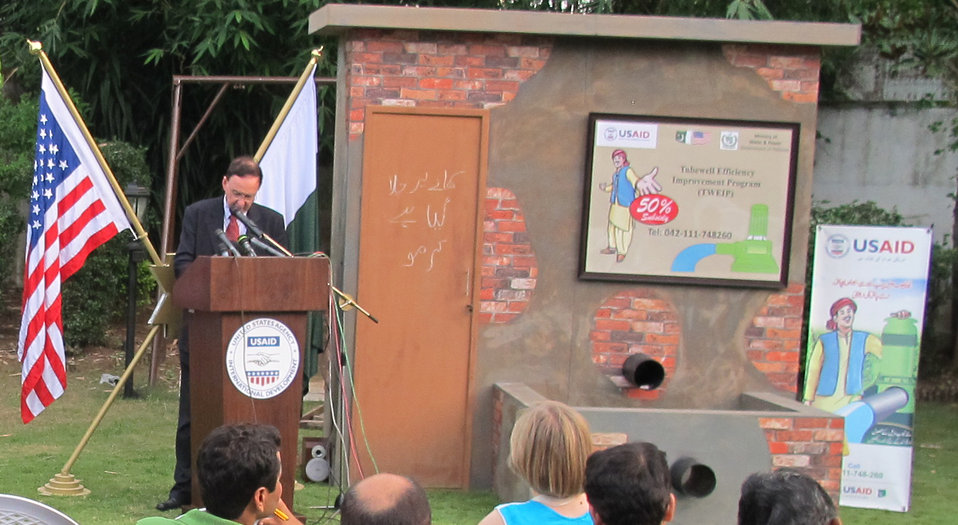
Launch of first-ever behavioral change campaign for energy efficiency in agriculture sector

Islamabad, July 28, 2011 – USAID Acting Deputy Director John Morgan speaking at the launch of Pakistan’s first-ever behavioral change campaign for energy efficiency in agriculture sector.

This campaign is sponsored by the U.S. Government as part of the United States commitment to support the Government of Pakistan in strengthening the country’s energy sector. This commitment was affirmed by U.S. Secretary of State Hillary Clinton in October 2009, when she announced a number of new energy programs. Through these programs, the U.S. Government is now working with Pakistan to reduce energy transmission losses, to improve energy production, and to increase the efficiency of the energy use.

The United States energy assistance, delivered by the U.S. Agency for International Development (USAID), includes a number of programs that together, will increase energy production capacity by approximately 600 Mega Watts.